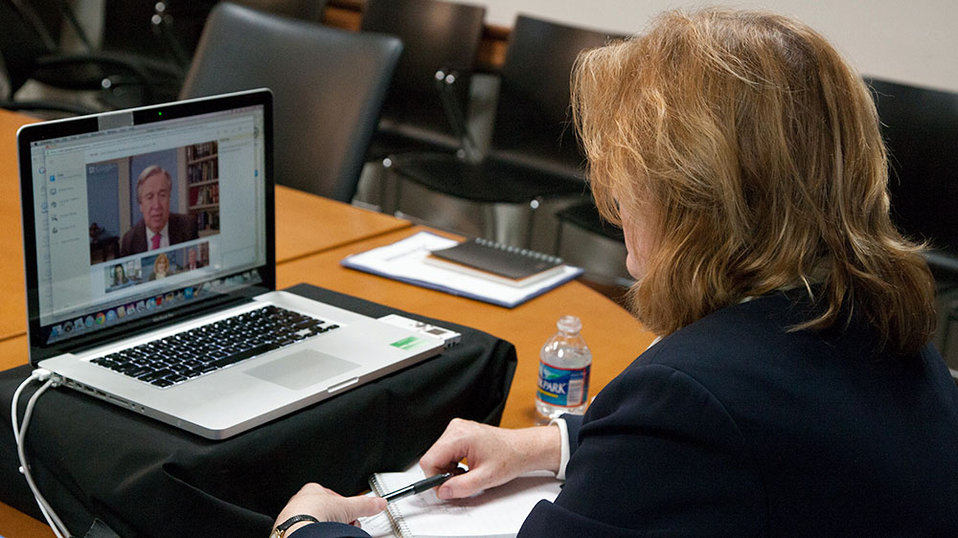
Assistant Secretary Richard Participates in a Google Hangout on Aid to Syria

Anne Richard, U.S. Assistant Secretary of State for Population, Refugees, and Migration, participates in a Google Hangout with Antonio Guterres, UN High Commissioner for Refugees, and Lara Setrakian, Founder of Syria Deeply, on assistance to Syria on March 19, 2013.